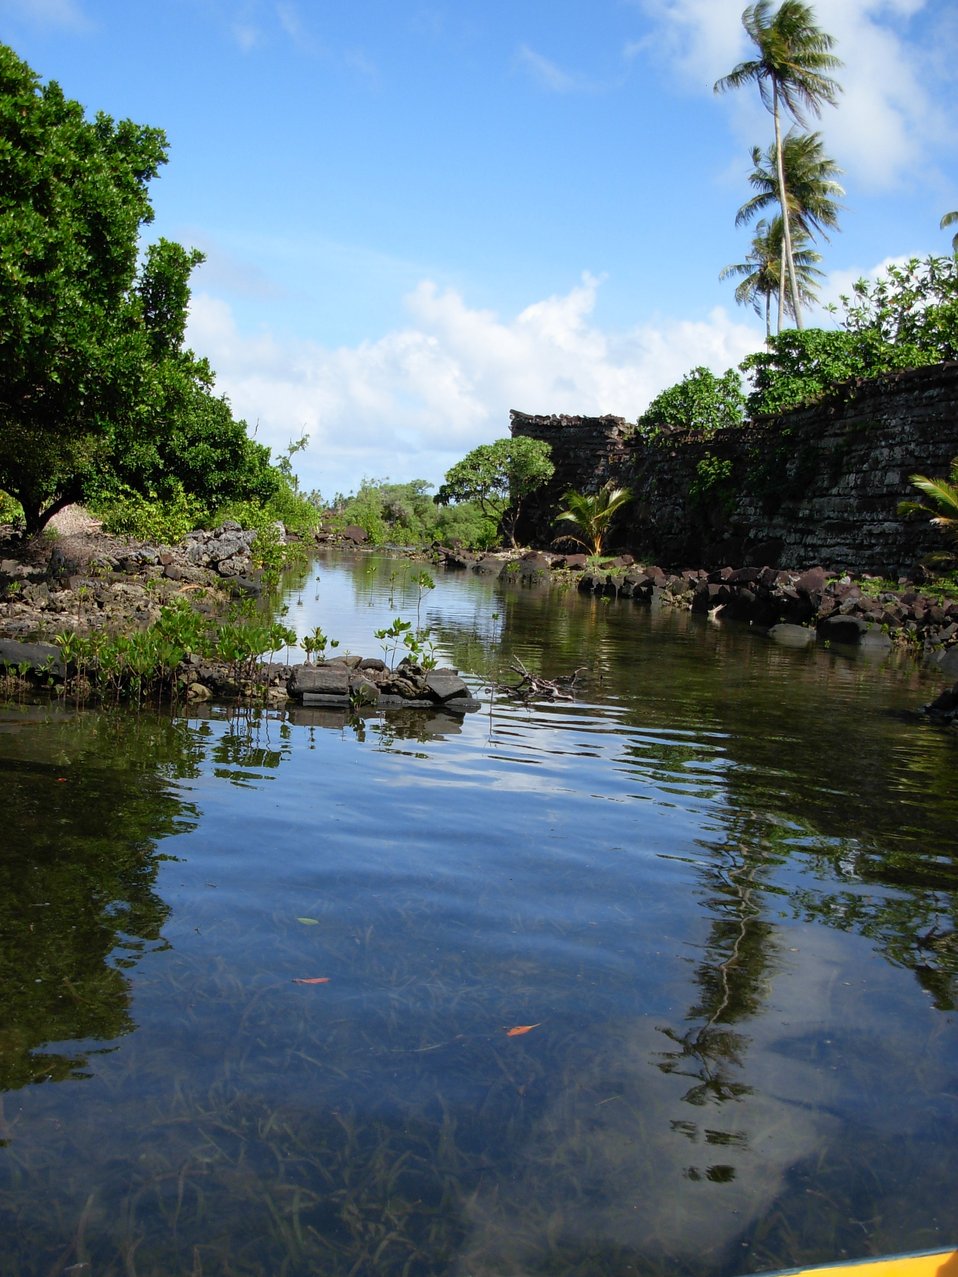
The volcanic 'log' city of Nan Madol.